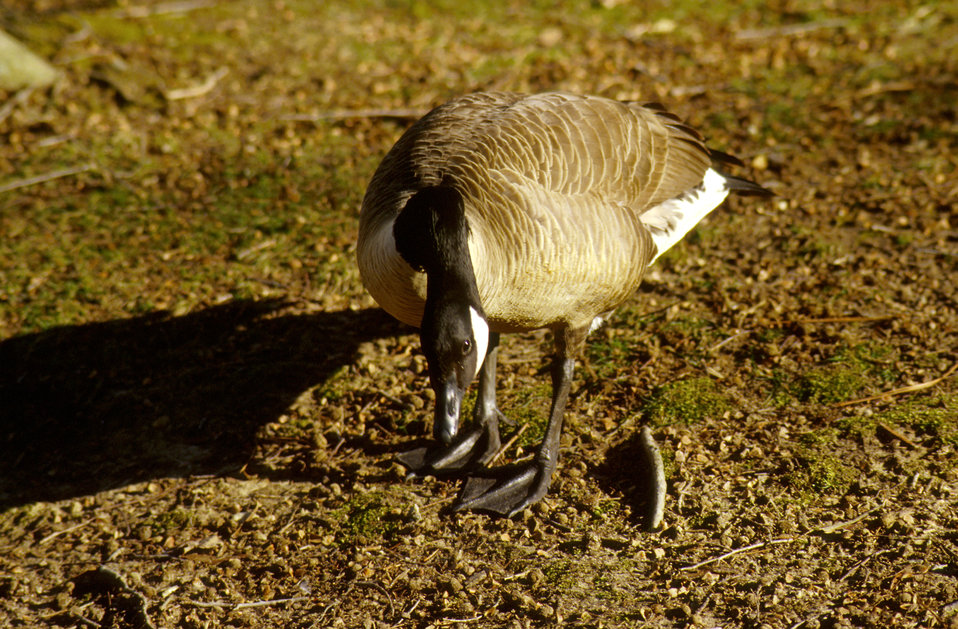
Canada Goose

A close view of a Canada Goose.